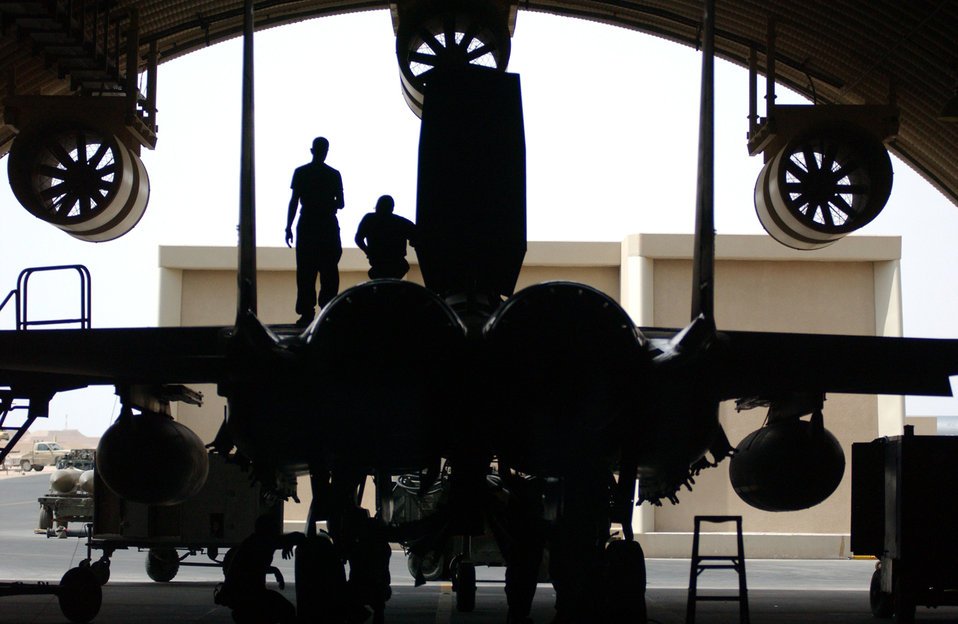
Strike Eagle keepers

OPERATION IRAQI FREEDOM -- 336th Expeditionary Fighter Squadron maintainers work on a F-15E Strike Eagle. The 336th EFS is deployed to a location supporting Operation Iraqi Freedom. The maintanence crews work around the clock to ensure every aircraft is ready for the next mission.